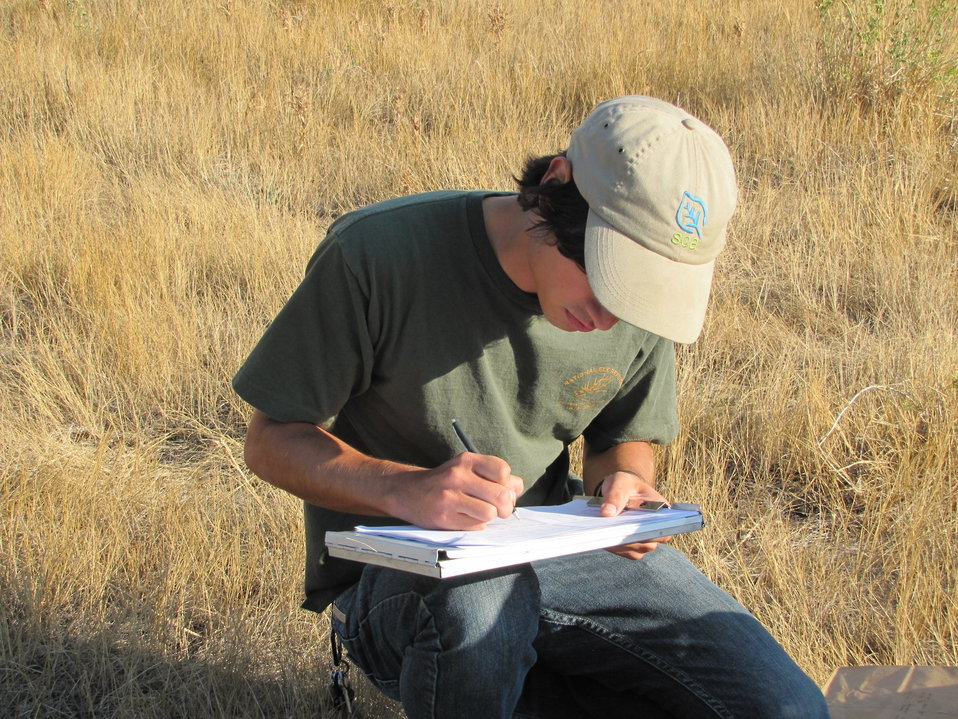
Recording the Data

Student Conservation Association (SCA) intern Dominick Harris records data for Refuge Biologist Eric Cole in early September 2012. The information was used to calculate the amount of herbaceous forage grown on the National Elk Refuge earlier in the season.